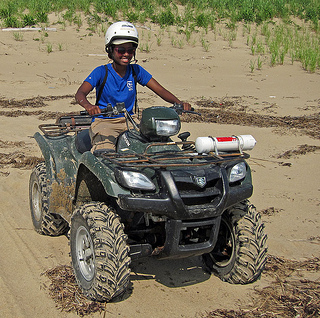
Monitoring invasive species

U.S. Fish and Wildlife Service